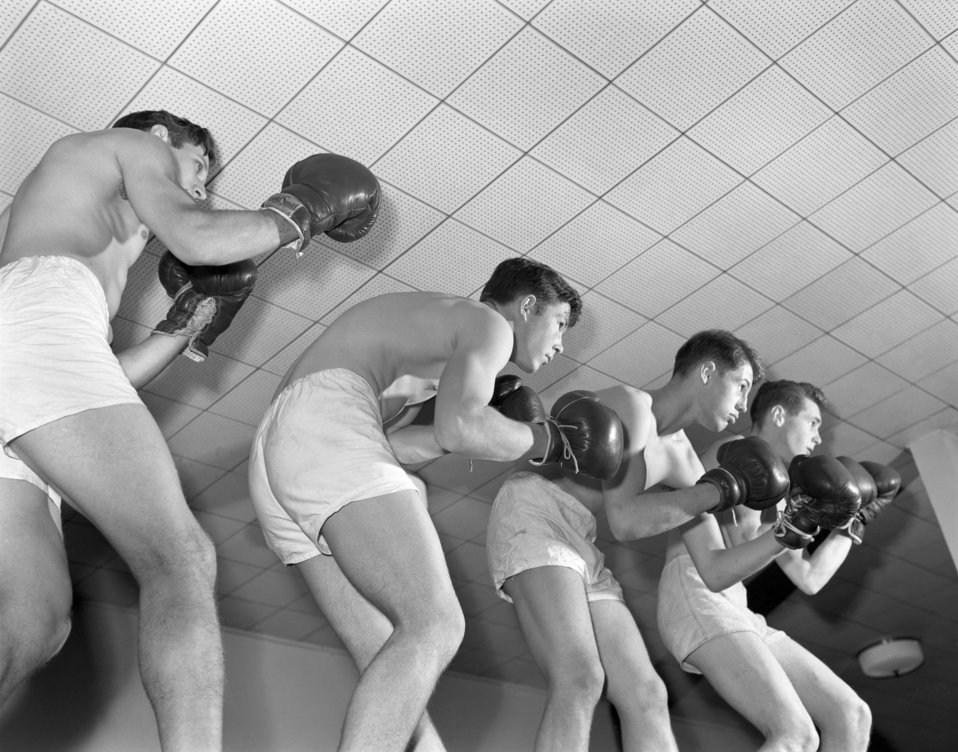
High School Boxing Team Oak Ridge 1947

4061 DOEphoto Ed Westcott 12-5-1947 Oak Ridge Tennessee